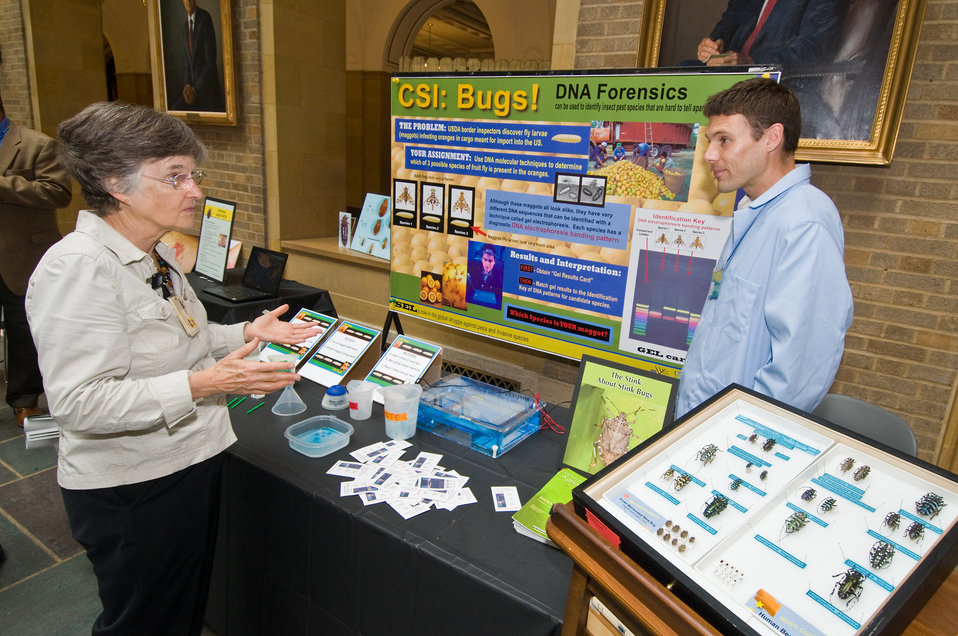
Ellen Mann (left), Library Technician, Special Collections, National Agricultural Library in Beltsville, Maryland listens to Matt Lewis (right), Invasive Insect Biocontrol and Behavior Laboratory, Beltsville Agricultural Research Center, Beltsville, Maryland explain how the lab set up the protocol for insects that are hard to identify at the, 'Celebrating Science Bed Bugs...Chocolate...and Beyond' event held at the United States Department of Agriculture in Washington, DC, on Monday, October 4, 2010. The protocol is the first line of defense against invasive insect species and mice. USDA Photo 10di1515-49 by Bob Nichols.